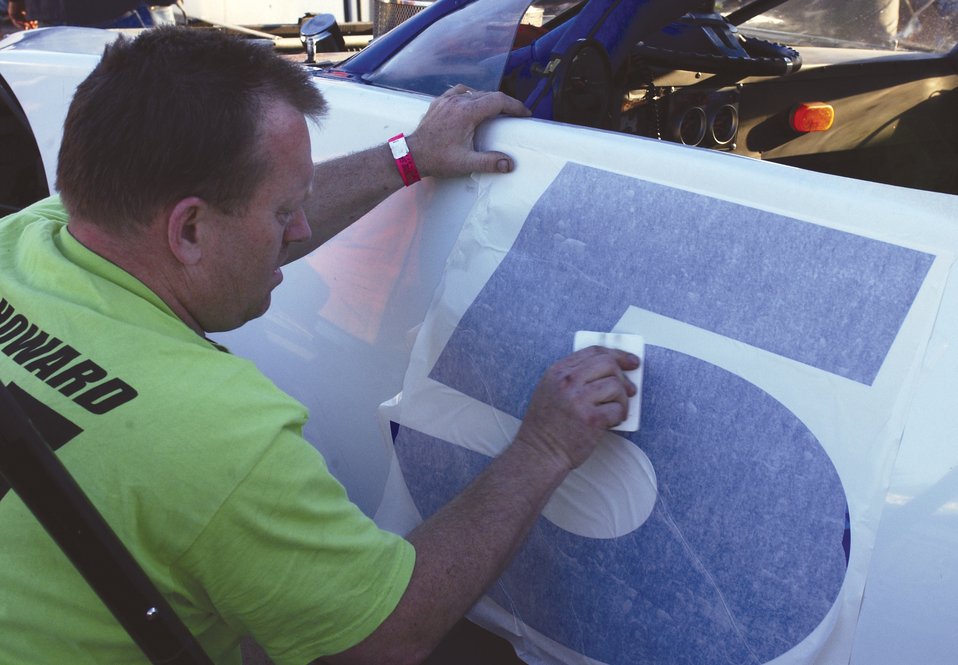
Airman spends free time living only way he knows -- fast

KENLY, N.C. -- Master Sgt. Warren Howard applies a number to one of his teammate's cars here. He has raced cars since he was 16 years old and is the environmental coordinator with the 4th Equipment Maintenance Squadron.